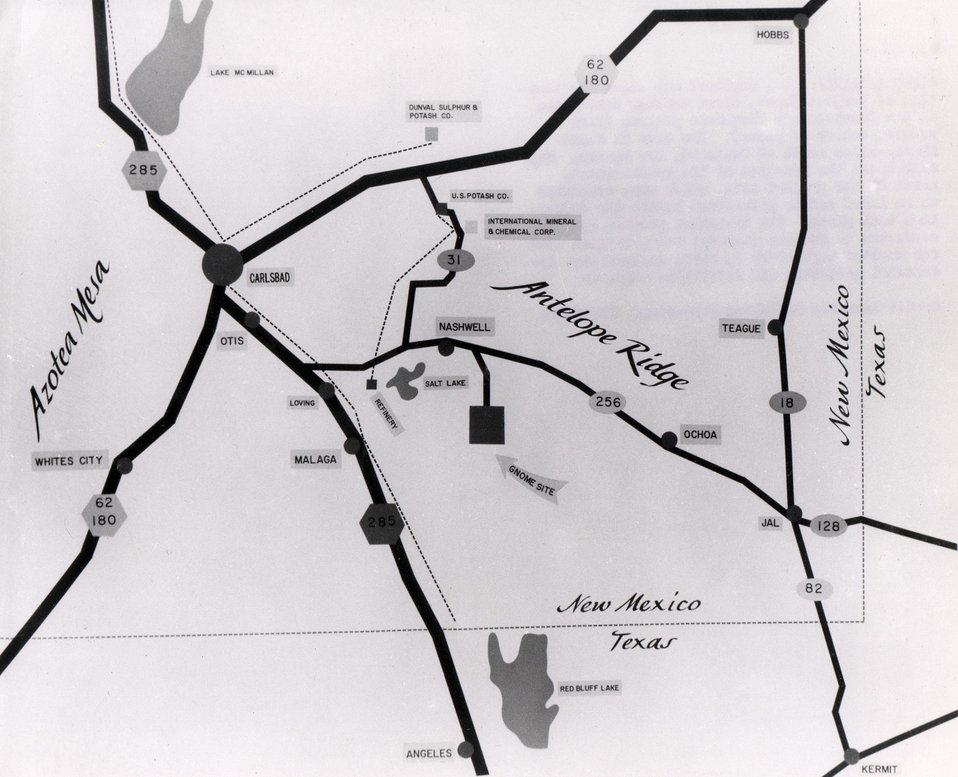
GNOME LOCATION...Stylized map shows the location of Project Gnome, the first nuclear detonation in the Commission's Plowshare Program (dark square, center of photo). Map also shows the location of the potash mines, north of the project site, which were evacuated as an added safety precaution before the detonation took place. Circa 1962.